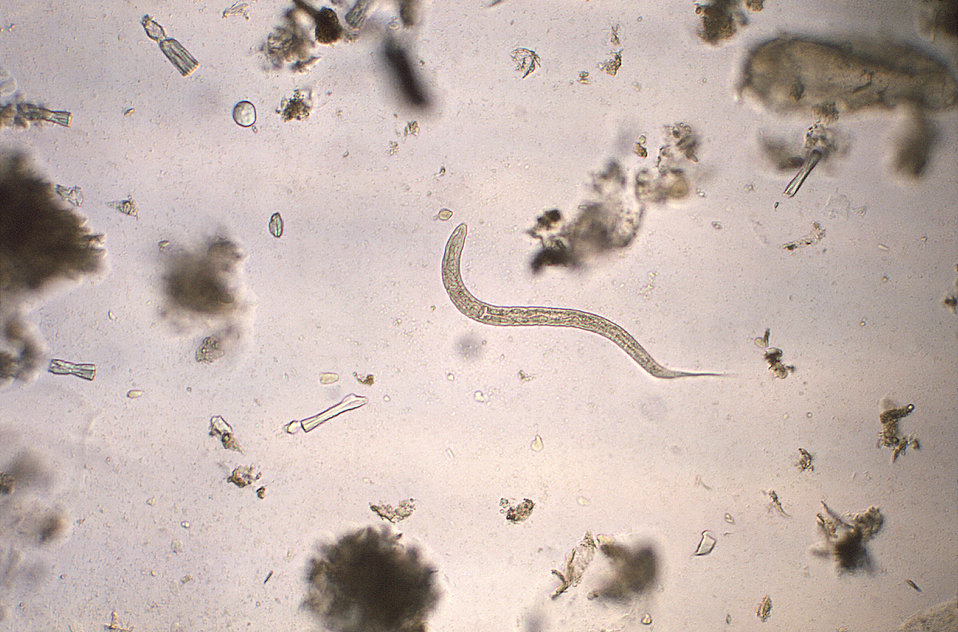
Under a magnification of 128X, this photomicrograph revealed some of the morphologic ultrastructure of a hookworm rhabditiform larva. Rhabditiform (L1) larvae that hatch from eggs are 250-300�m long, and approximately 15-20�m wide. They have a long buccal canal, and an inconspicuous genital primordium. Rhabditiform larvae are usually not found in stool, but may be found there is a delay in processing the stool specimen. If larvae are seen in stool, they must be differentiated from the L1 larvae of Stronyloides stercoralis.